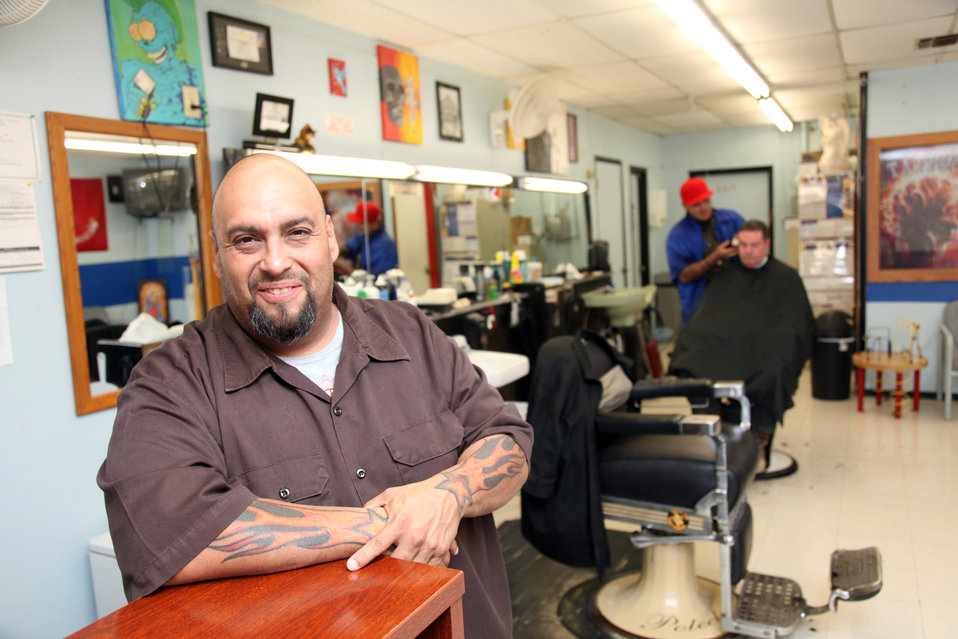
AJ's Fresh Line Up

Richard Sanchez, co-owner of AJ'S Fresh Lineup, says he and his parter paid about $20 to have all the lights in their small barbershop replaced through San Antonio's City Lights program. The program is saving the barbershop an estimated 1,630 kilowatt-hours and $133 on electricity bills each year.